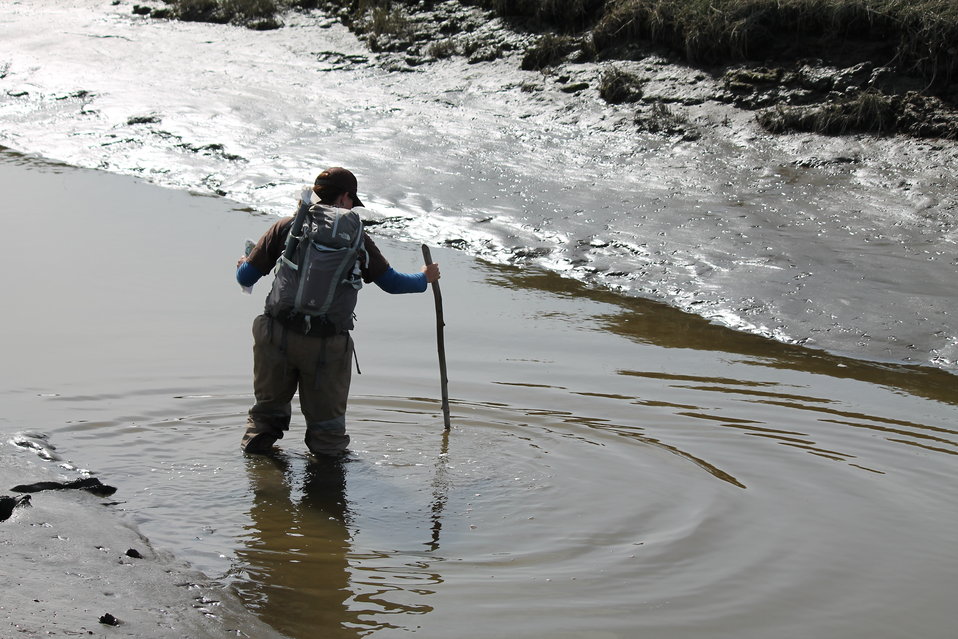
Tidal sloughs are a challenge in coastal zones of Alaska. Understanding the tidal regime (when the tide will be high and when the tide will be low) is important . Many projects on the YKD relay on tides to access project sites and to complete projects.

USFWS Yukon Delta NWR